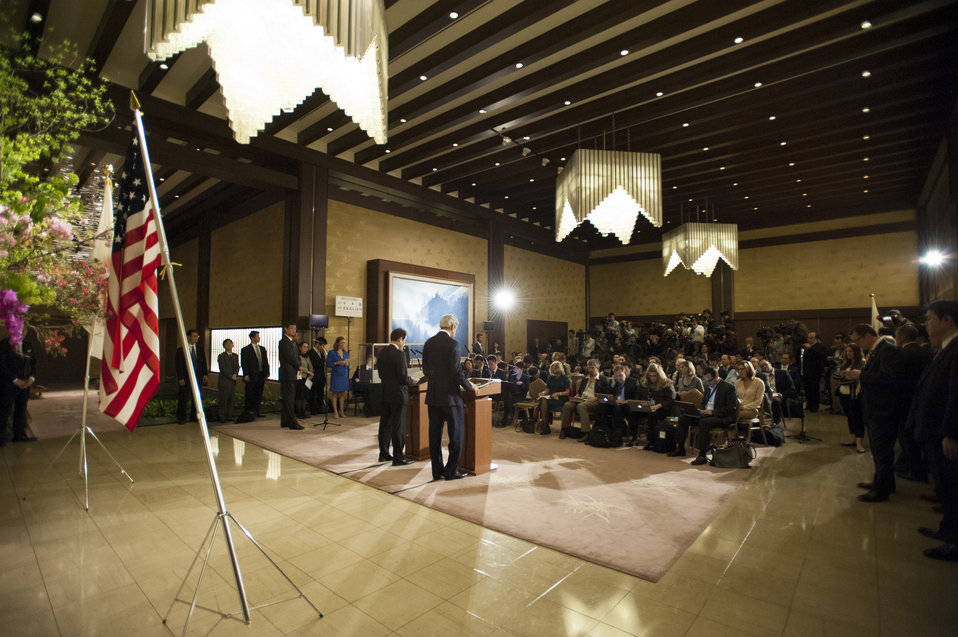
Secretary Kerry with Japan’s Foreign Minister Kishida

U.S. Secretary of State John Kerry and Japanese Minister for Foreign Affairs Fumio Kishida during their joint press conference in Tokyo, Japan, on April 14, 2013.